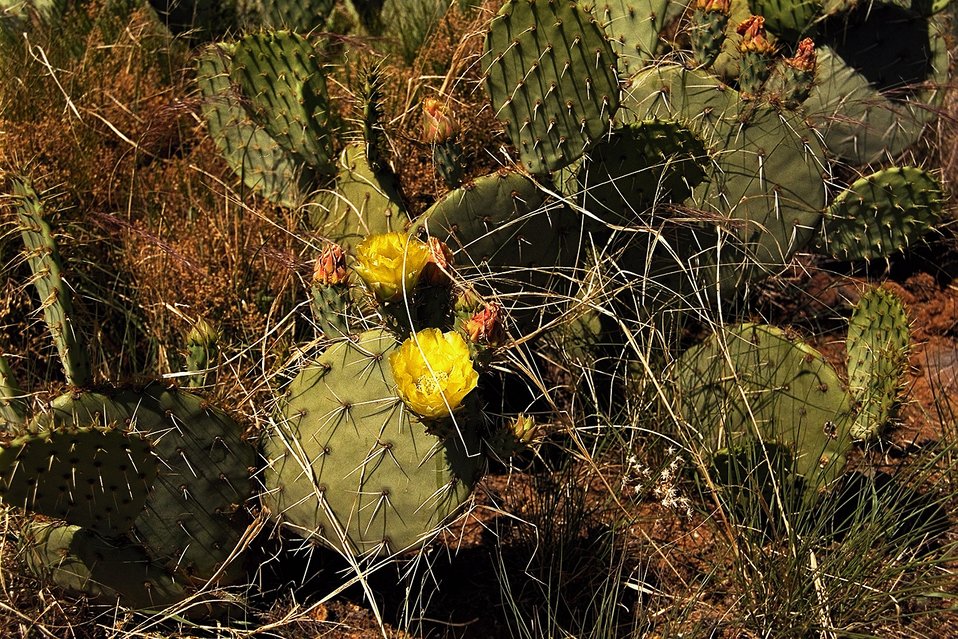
Another Prickly Pear Cactus in bloom in the Agua Fria National Monument.